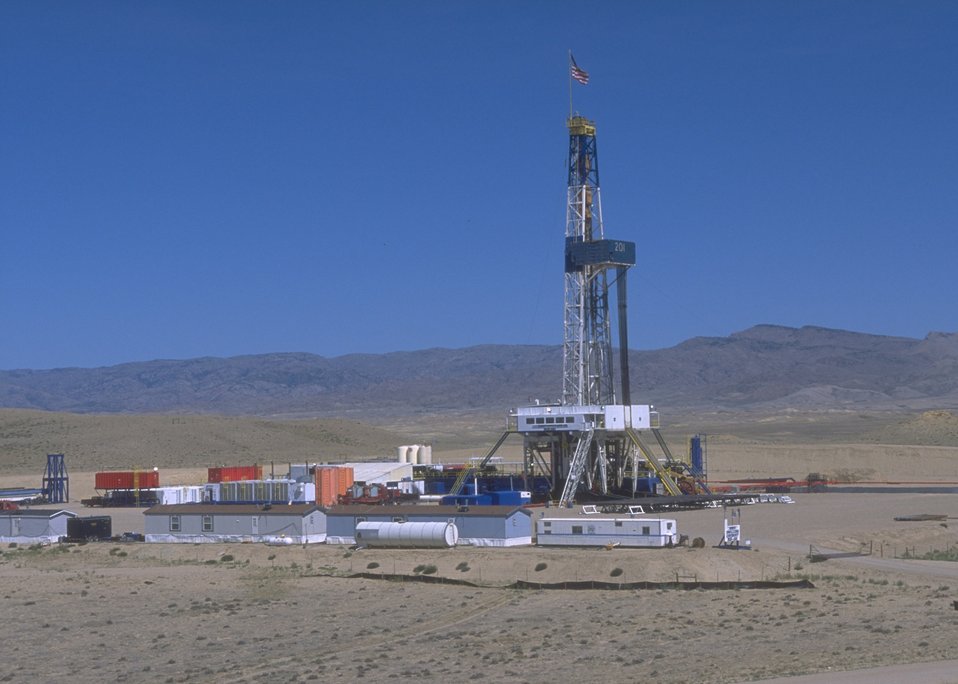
Burlington Northern deep well rig, Casper Field Office.